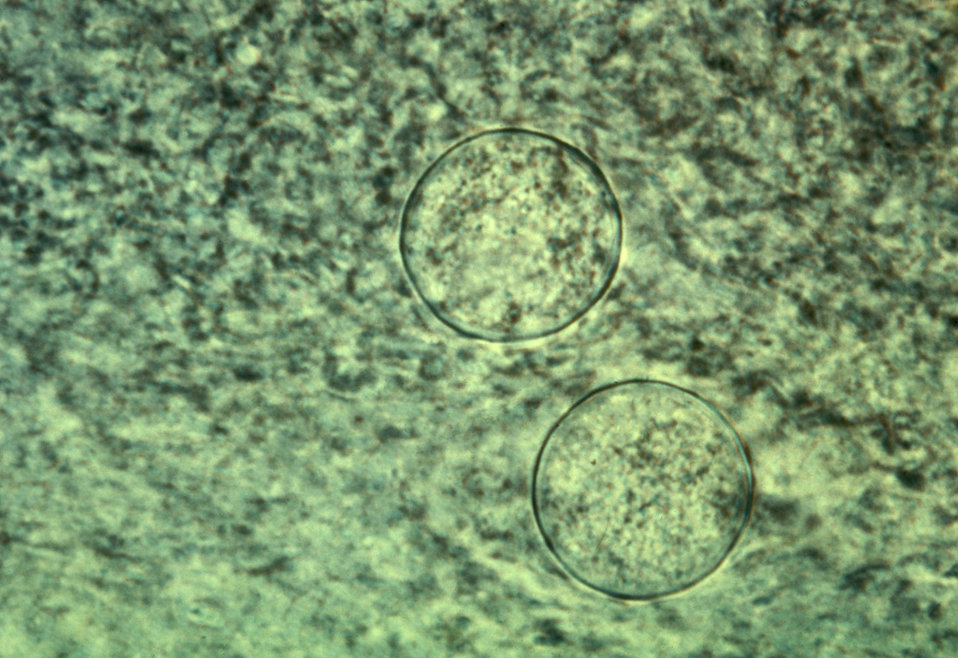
Harvested from an infected mouse, thiis photomicrograph was derived from a smear of an exudate, and revealed spherules of Coccidioides immitis.